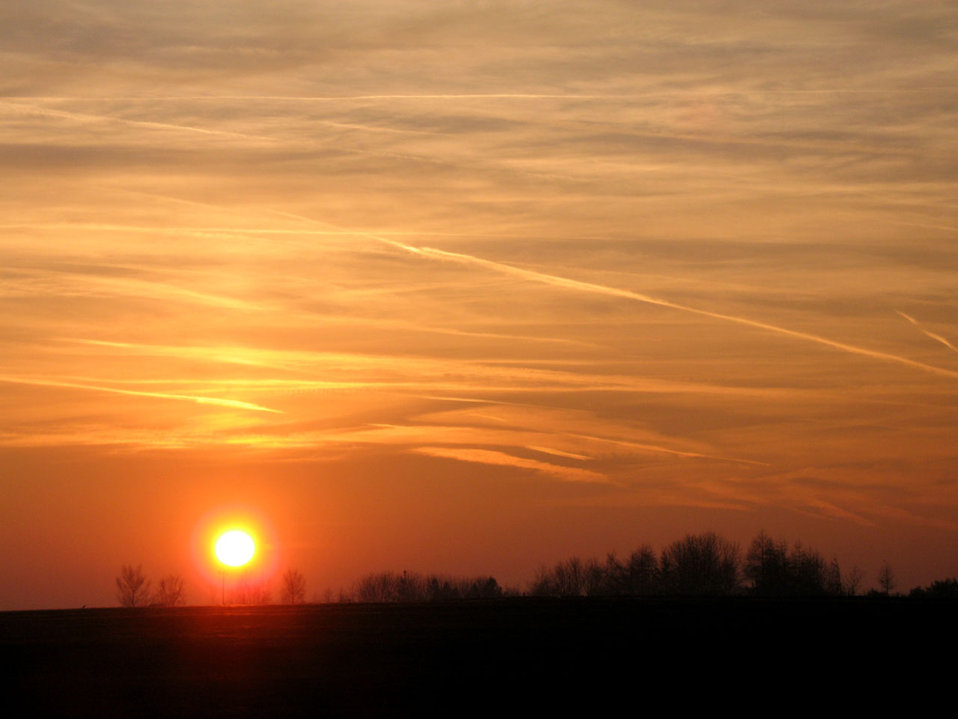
Sunset

Nice orange sunset.